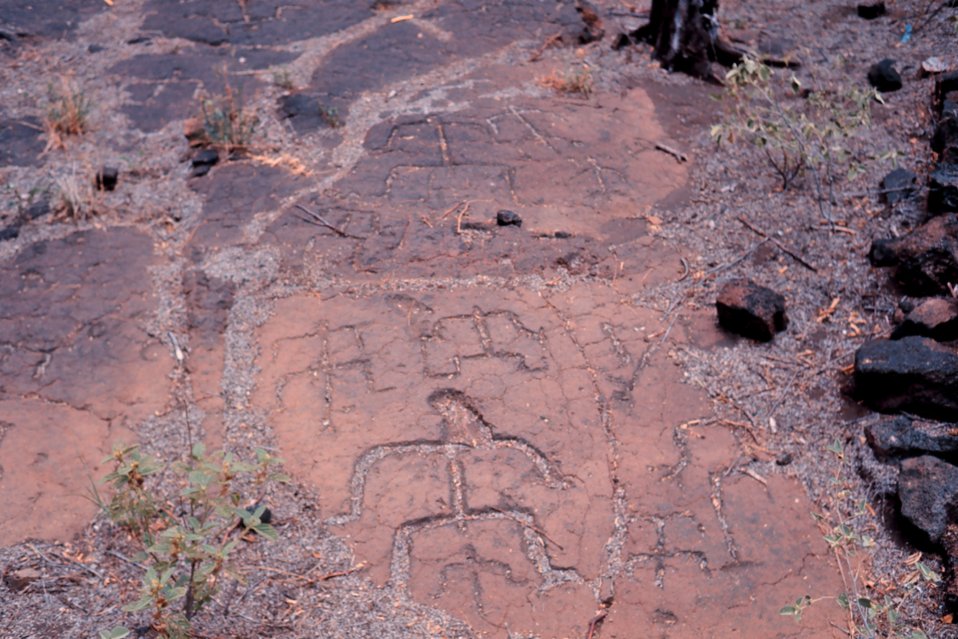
Petroglyphs